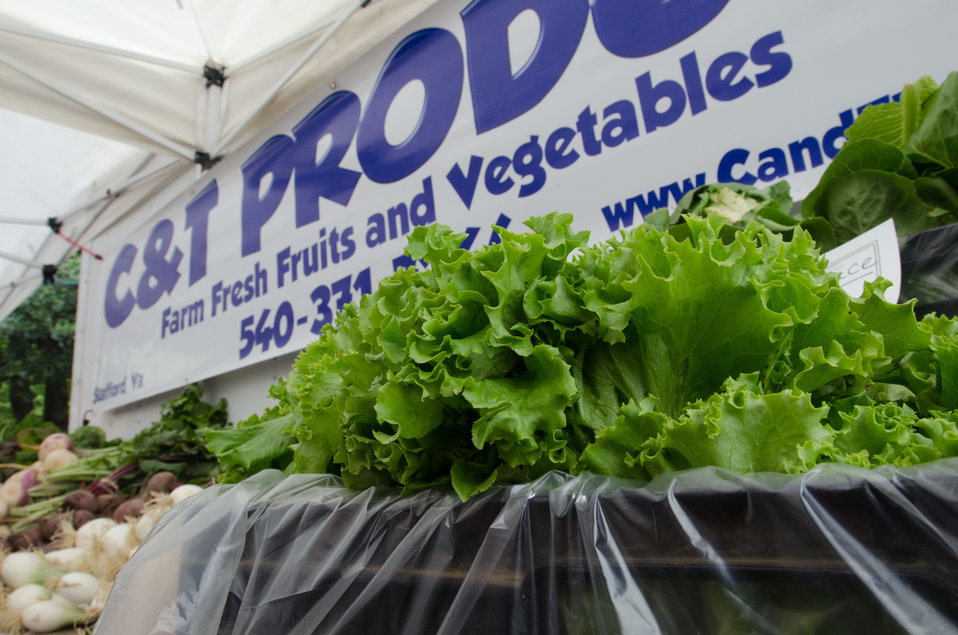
Fresh vegetables from C & T Produce at the U.S. Department of Agriculture (USDA) summer farmers market opening of the 17th season at the USDA Whitten Building east parking lot in Washington, D.C., on Friday, May 31, 2012. This year's theme is Grow, Healthy, Eat Healthy & Be Healthy. USDA and Fuel Up to Play 60, in partnership with the National Dairy Council and the National Football League, invited residence, visitors and local school children to participate in opening day activities. Hip Hop Public Health featuring Easy A.D. from Cold Crush Brothers and disk jockey Artie Green play music and invite people to get up on stage to dance or hula hoop to get active. D.C. Truck Farm help people know from what plants, that certain herbs, fruit and produce come from by giving tail-gate tours of the garden growing in the bed of their pickup truck. The Peoples Garden Initiative and USDA Executive Master Gardeners gave away a variety of fruit and produce seedlings to include the Tomato ‘Abraham Lincoln’ in celebration of the USDA 150th Anniversary and to share their harvest. New features for 2012 include an on-site sign language interpreter, a hand washing station, and a USDA-certified organic vendor. Other products selling today are fresh fruits, vegetables, herbs, baked goods, meats, kettle popcorn, local honey, hand-made soap and more.